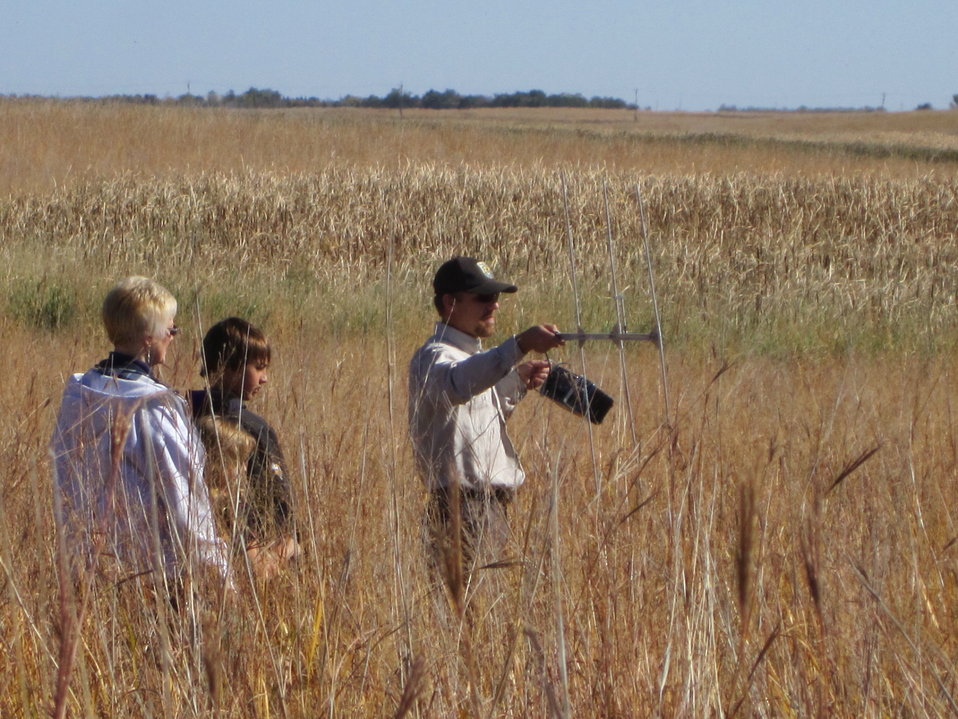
Prairie Fest 2012

Biologist Brent Jamison teaching kids about widlife telemetry.